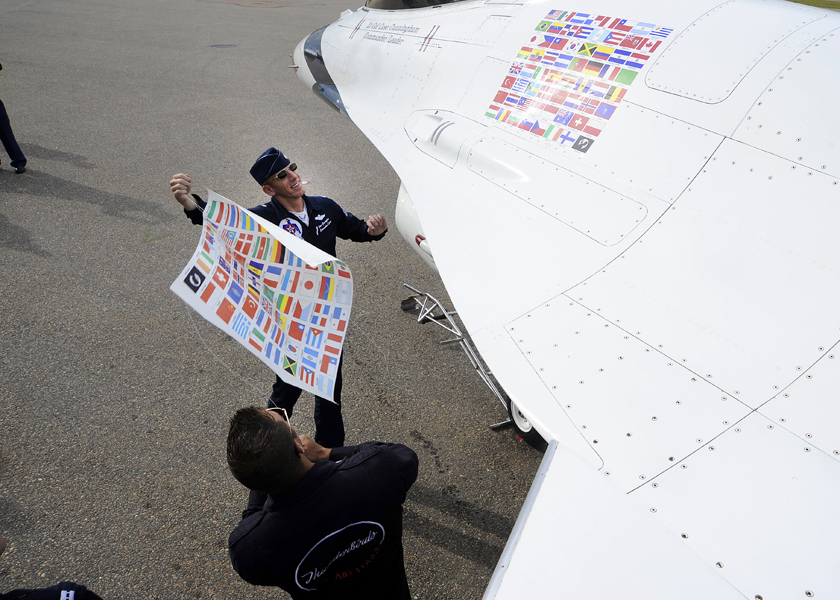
Thunderbirds in Finland

Lt. Col. Case Cunningham, Thunderbird No. 1, and Tech. Sgt. Paul DeGrechie pull off the old flag panel, revealing the new panel bearing the flag of Finland at Turku Air Base, Finland, June 18, 2011. This marks the first time in the team's 58-year history to fly in Finland. The Thunderbirds will perform in nine countries during their European tour, fostering international goodwill and representing America's Airmen around the globe.